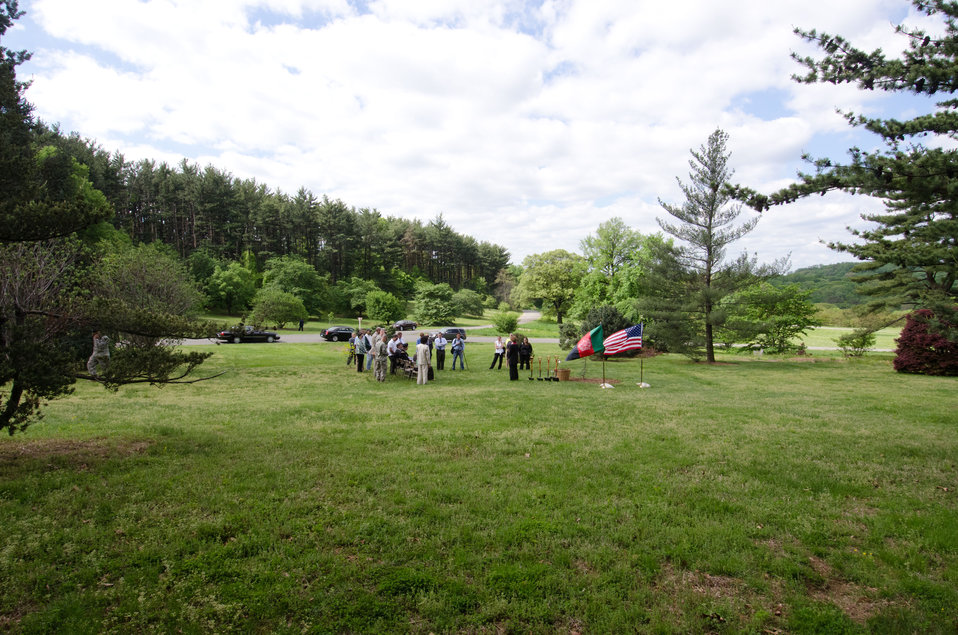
Among the great variety of trees at the U.S. National Arboretum, Army National Guard Major General Darren Owens, Ghazni Directorate of Agricultural Irrigation and Livestock Sultan Hossain, Ghazni University Senior Agricultural Student Abdul Fatah, Agriculture Deputy Under Secretary of Farm and Foreign Agricultural Services Darci Vetter (right, near shovels) spoke to the assembled audience at the Arbor Day tree planting of a Cedrus deodara ('Karl Fuchs') in honor of an Afghan delegation and to represent the bond with Afghanistan. It is the first of this kind of tree to be planted on the grounds. The tree is originally from Pakta Province and the most important tree in Afghanistan for timber.